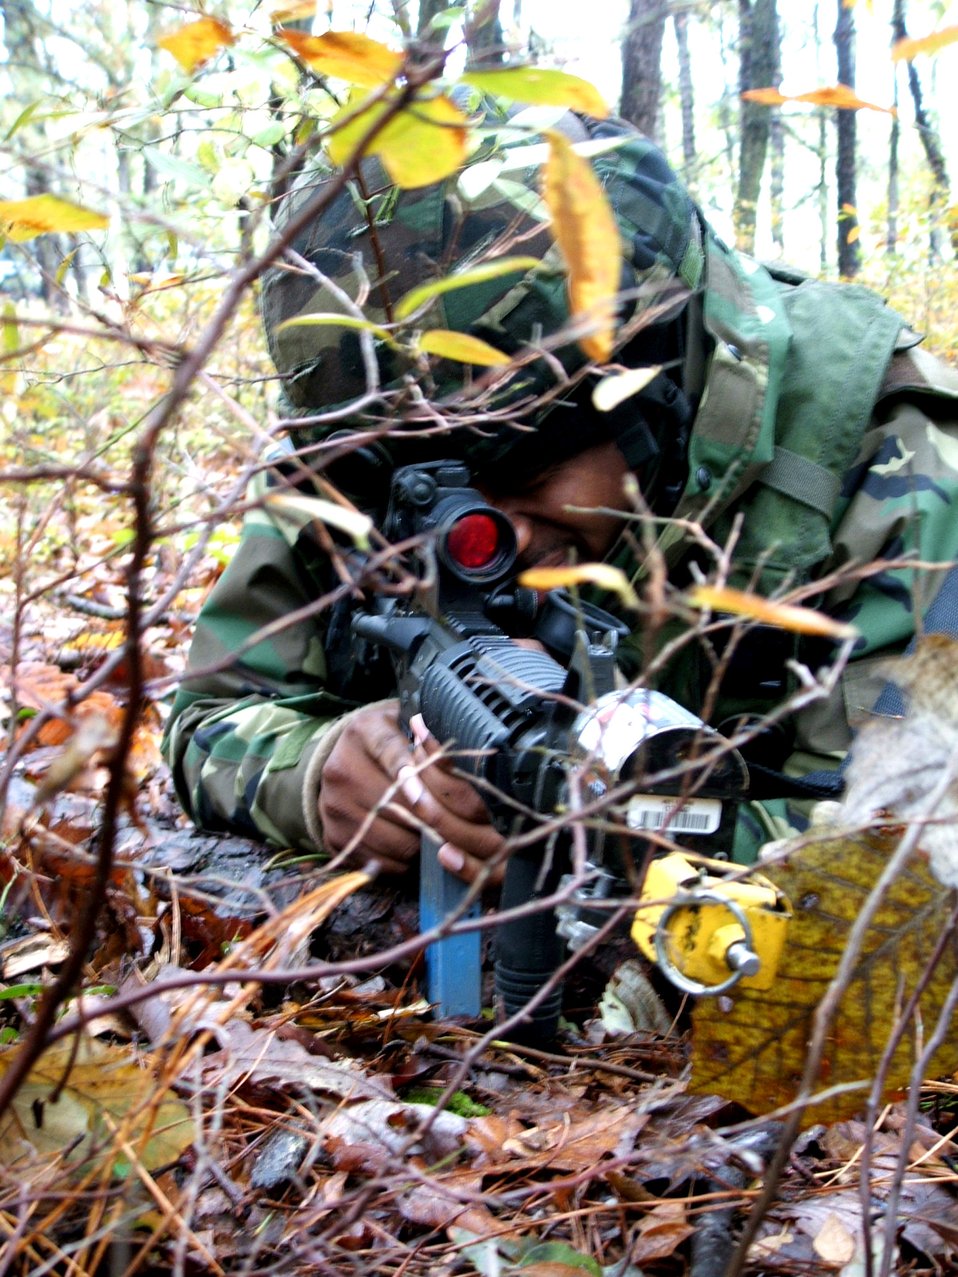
Eagle Flag

NAVAL AIR ENGINEERING STATION LAKEHURST, N.J. (AFPN) -- Staff Sgt. Ricky Faulk takes cover in the wood while on patrol near here. The Airman, on patrol here Oct. 22., deployed from the 613th Security Forces Squadron, Andersen Air Force Base, Guam, to take part in exercise Eagle Flag 06-1, which began Oct. 21.